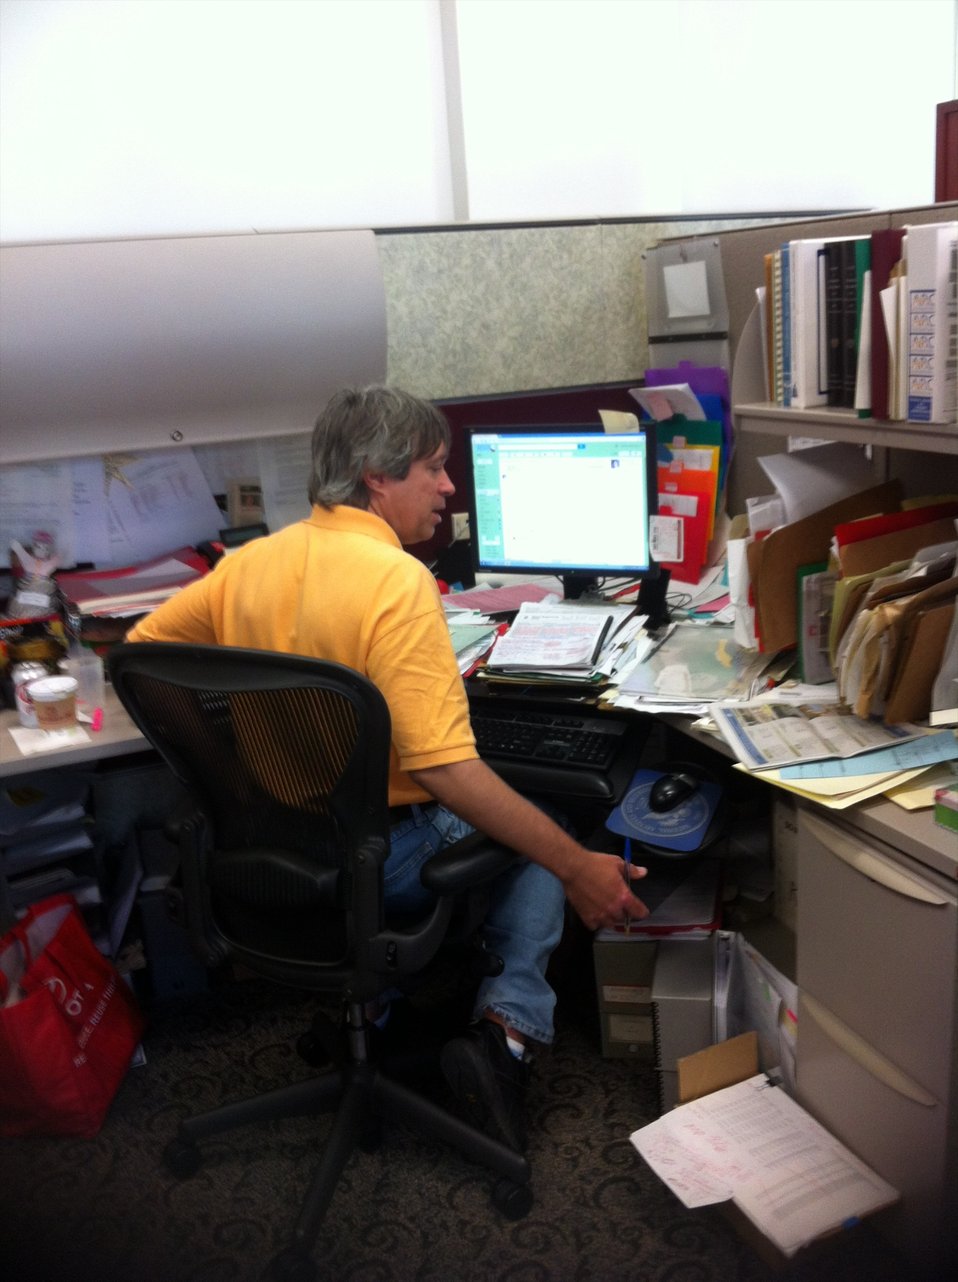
Nick Baric is at his desk composing an email.; Location: Archives 1, Washington, D.C.